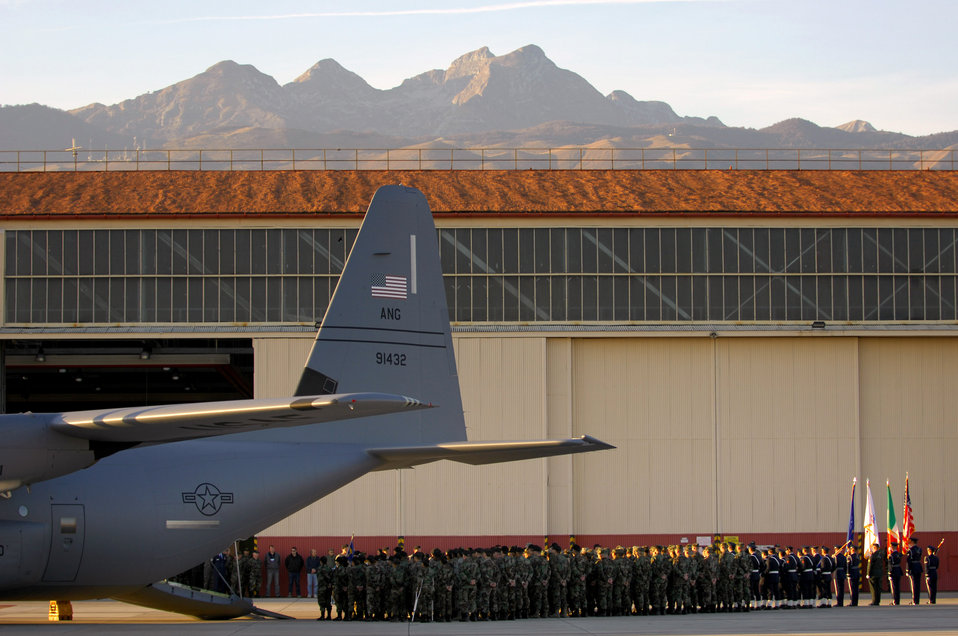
Fallen Airmen, Soldiers honored at Aviano

Airmen and Soldiers conduct a repatriation ceremony Nov. 13 for six servicemembers killed in a Nov. 8 Army UH-60 Black Hawk helicopter crash 22 miles south of Aviano Air Base, Italy.